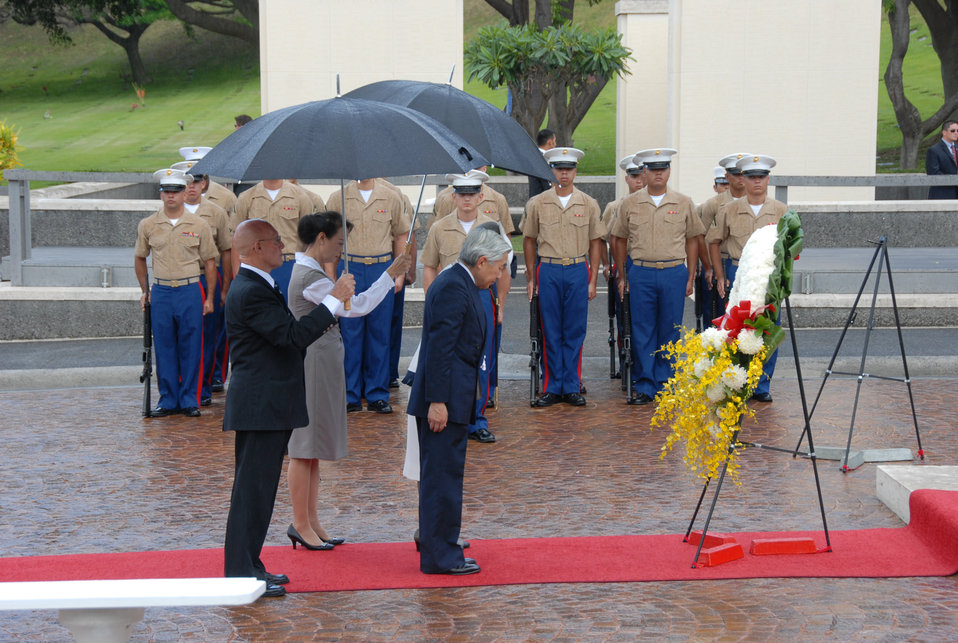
Japanese royalty honors America's fallen

Emperor Akihito and Empress Michiko, the Japanese Imperial Couple, bow to pay tribute to the interred at the National Memorial Cemetery of the Pacific July 15 at Punchbowl Crater, Hawaii. The ceremony included the laying of a chrysanthemum wreath, the playing of